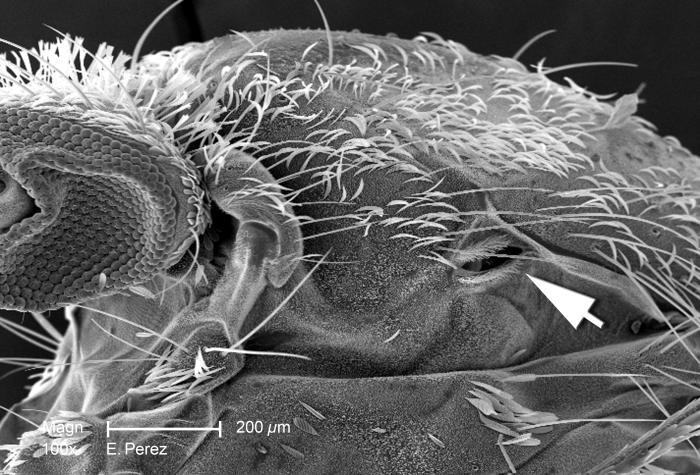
This is the first of four scanning electron micrographs (SEM) that are representative of successively greater magnifications of the thoracic region of an unidentified mosquito discovered in the suburbs of Decatur, Georgia. Note that PHIL 10520, 10521 and 10522 depict the morphology of this region in increasingly refined detail. Of interest is the anatomical feature known as the 'spiracle' (arrow), which is one of two orifices located on the thorax through which the insect breaths. There are eight additional spiracles located on the abdominal region as well. You'll also note the presence of numerous setae, or sensorial 'hairs', as well as many light-weight scales, all of which are composed of the same material as the exoskeleton itself, a substance known as chitin.